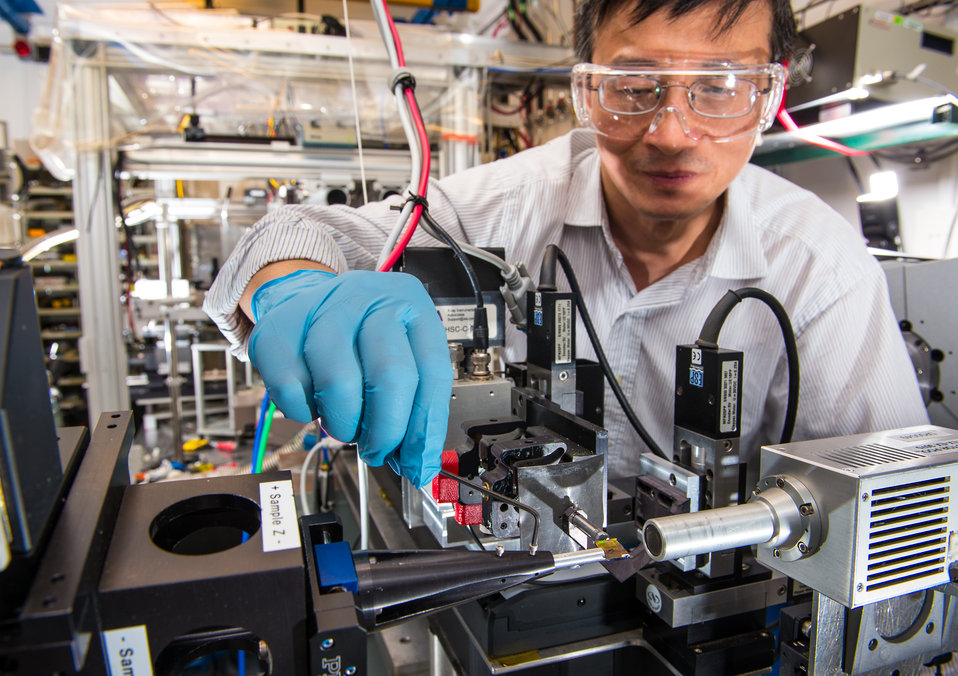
A beamline scientist at Argonne National Laboratory's Advanced Photo Source, aligns a sample of a computer chip in the nanodiffractometer, which allows for structural characterization of individual nanomaterials. .

This one-of-a-kind high-energy x-ray detector can focus on a wide variety of material structures with high resolution on a 200-nanometer sized area, much smaller than the typical diffraction detector micron range. The upgrade of the APS will increase focusing to 50 nanometers.